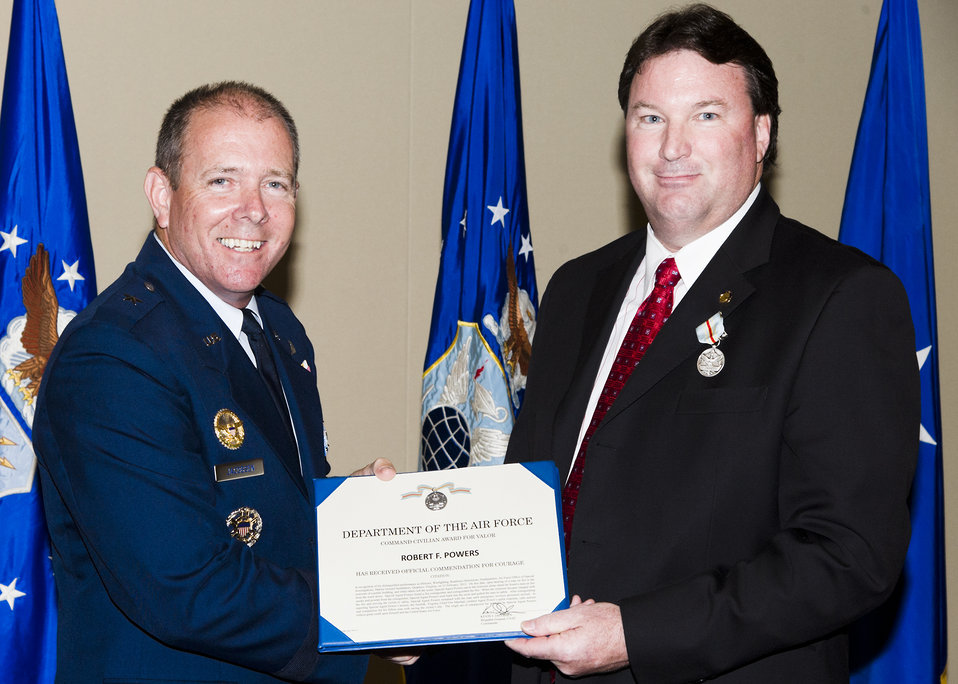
AFOSI hero rewarded

Brig. Gen. Kevin Jacobsen congratulates Special Agent Bob Powers for receiving the Command Civilian Award for Valor medal. Powers received the medal for rescuing a man who had accidently caught himself on fire in a public restroom. Thanks to his actions, the man survived. Jacobsen is the Air Force Office of Special Investigations commander.